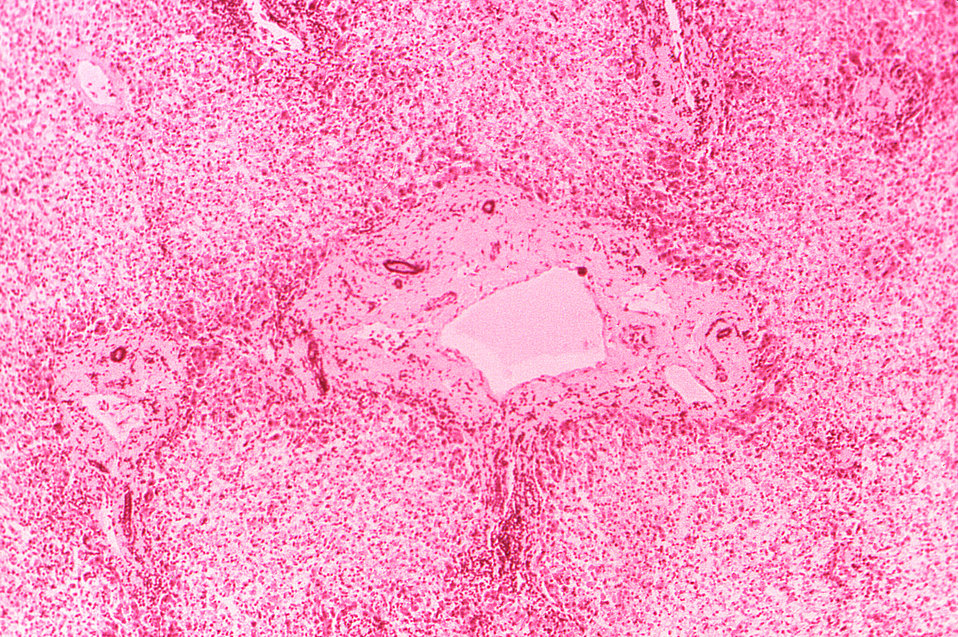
Under a low magnification of only 40X, this hematoxylin-eosin-stained (H&E) photomicrograph depicts the cytoarchitectural changes found in a liver tissue specimen extracted from a deceased yellow fever patient. Note that in this particular view a 'massive acidophilic necrosis' had taken place, leaving 'only a thin collar of hepatocytes remaining in the periportal region, and around the central vein.'. See PHIL 2176, and 8239, depicting TEMs of the yellow fever virus.